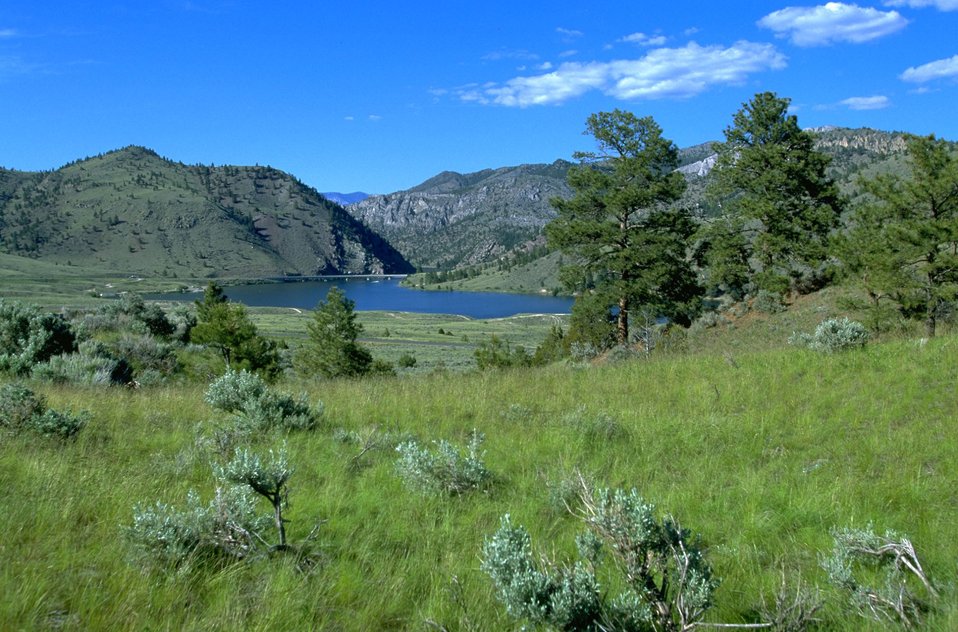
View of York Bridge stretching across Lake Hauser near Devils Elbow Campground